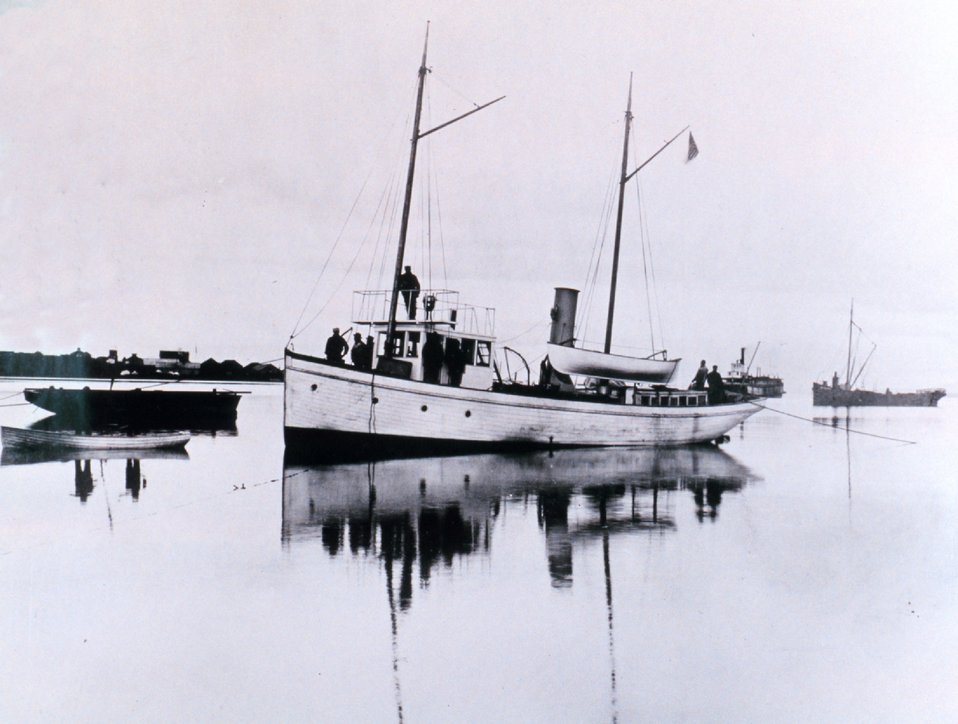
Coast and Geodetic Survey Ship YUKON in Alaskan waters.